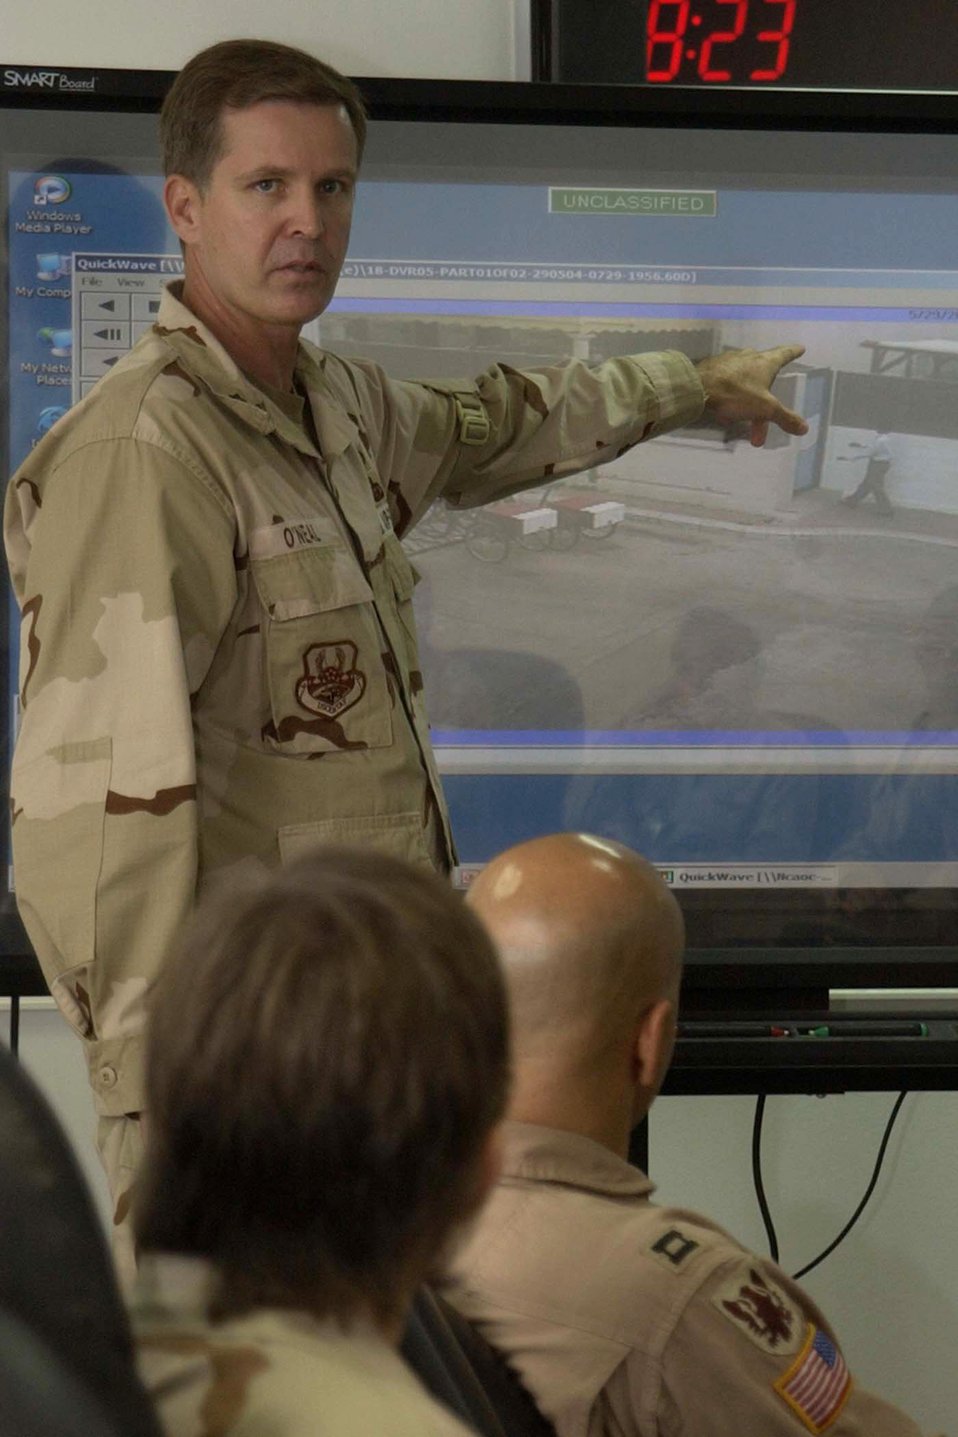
Colonel's training saved his life

SOUTHWEST ASIA -- Lt. Col. Ed O’Neal briefs Airmen on tactics and techniques for survival at a forward-deployed location. In his briefings, the colonel takes lessons learned from his actions during a vicious terrorist attack in Saudi Arabia in 2004. He uses surveillance footage from the compound’s cameras where the attack occurred as visual aids during the briefing that show the terrorists in action and him getting shot. Colonel O’Neal is the U.S. Central Air Forces director of manpower and personnel.